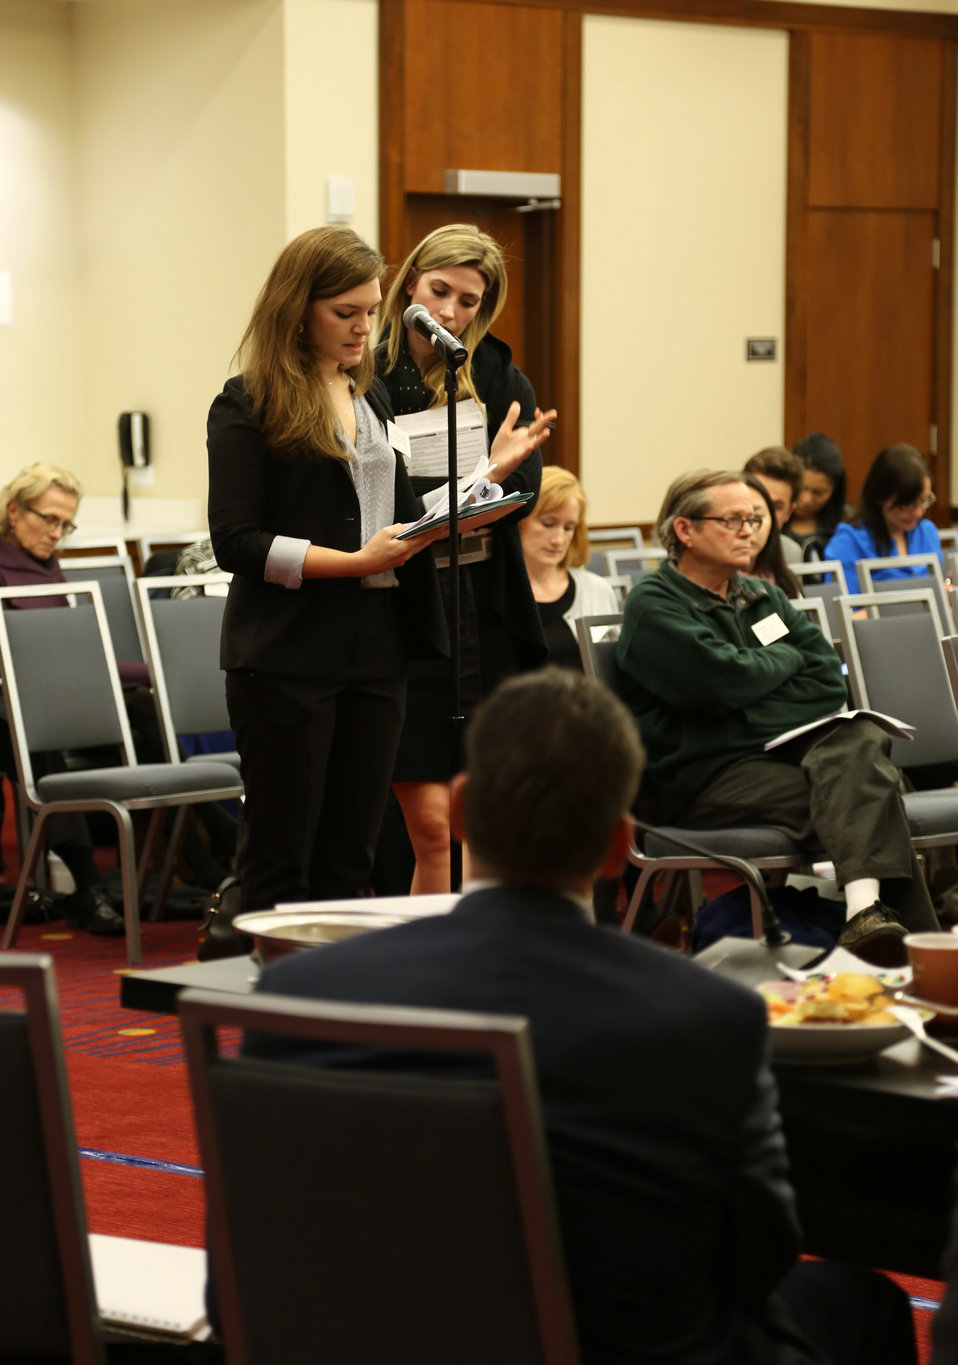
Wildlife Trafficking Advisory Council Meeting March 20, 2014